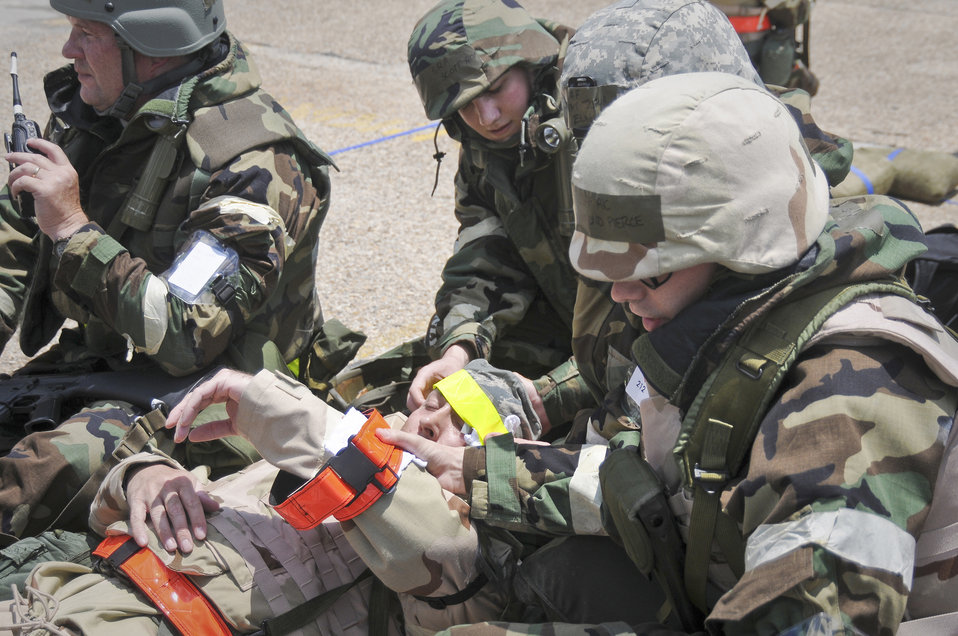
Homeland defense exercise

Members of the 123rd Airlift Wing render first-aid to an Airman from the 317th Airlift Group after a simulated attack on their shared facilities during an operational readiness inspection May 20, 2010, at the Gulfport Combat Readiness Training Center in Gulfport, Miss.